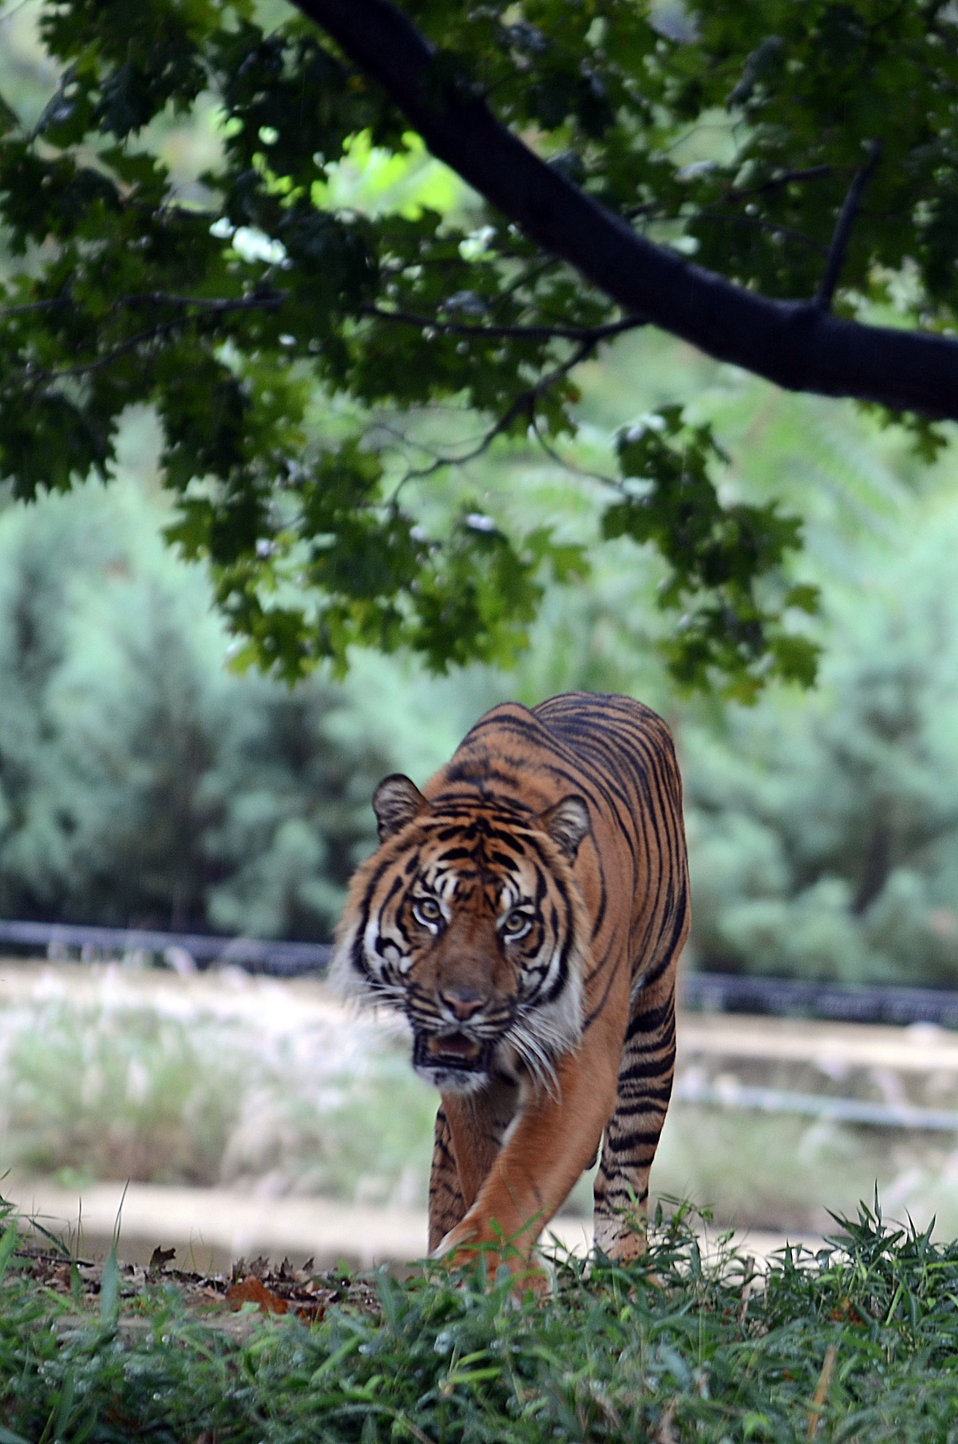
Save Vanishing Species Stamp First Day of Issue